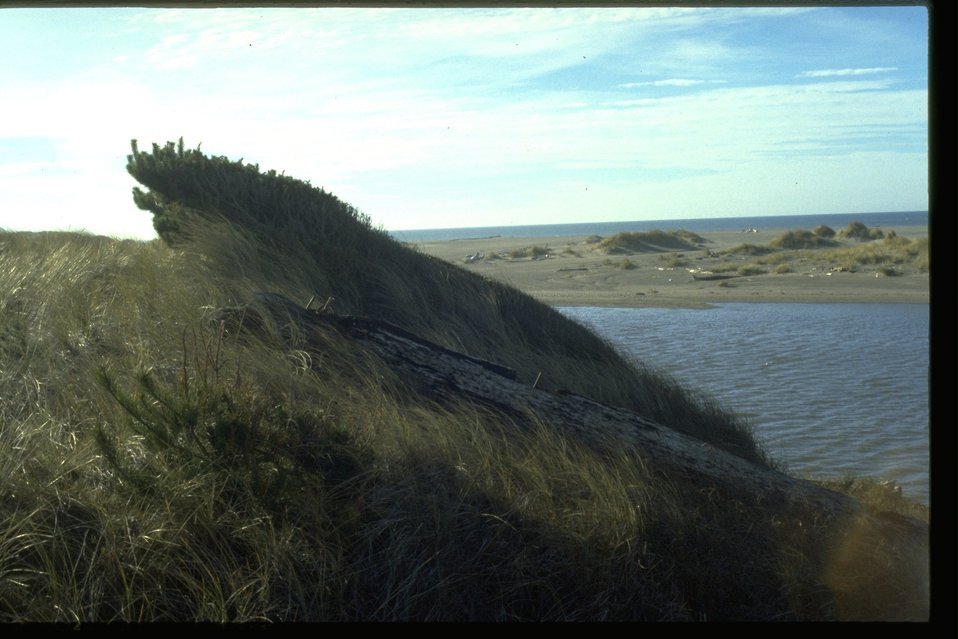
Wind sculptured vegetation at New River.